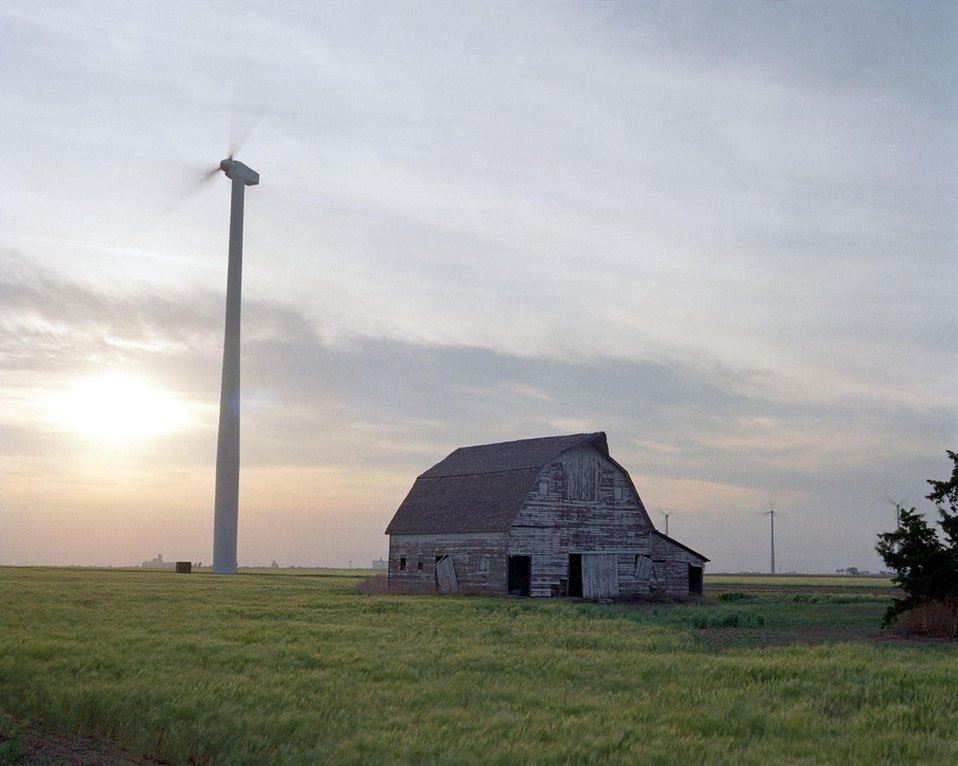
WIND FARM IN KANSAS DURING SUNSET.